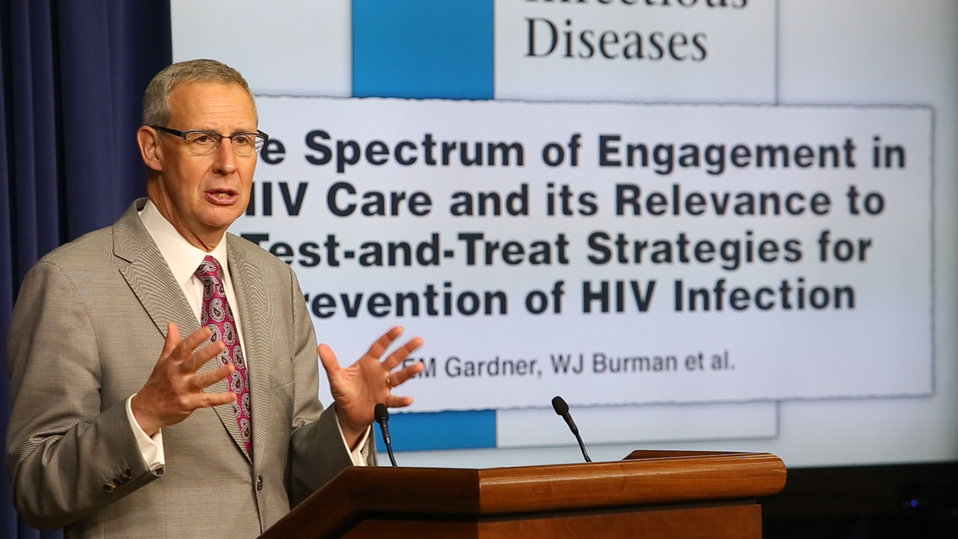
MVI 0180.MOV.Still001